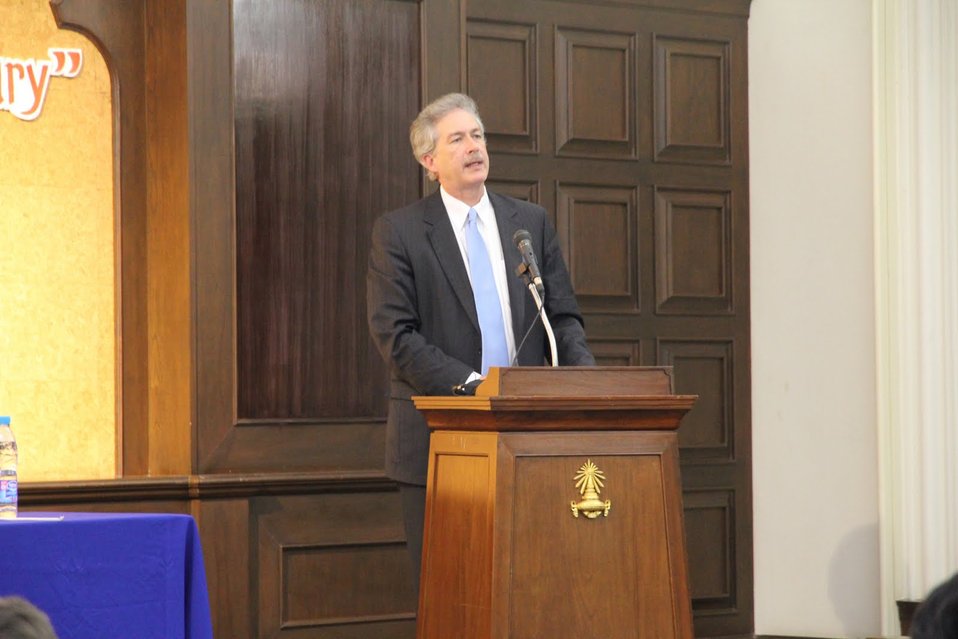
Under Secretary Burns Delivers Remarks

U.S. Under Secretary of State William J. Burns delivers remarks at the Maha Chulalongkorn Building of the Faculty of Arts, Chulalongkorn University, in Bangkok, Thailand, on July 16, 2010.